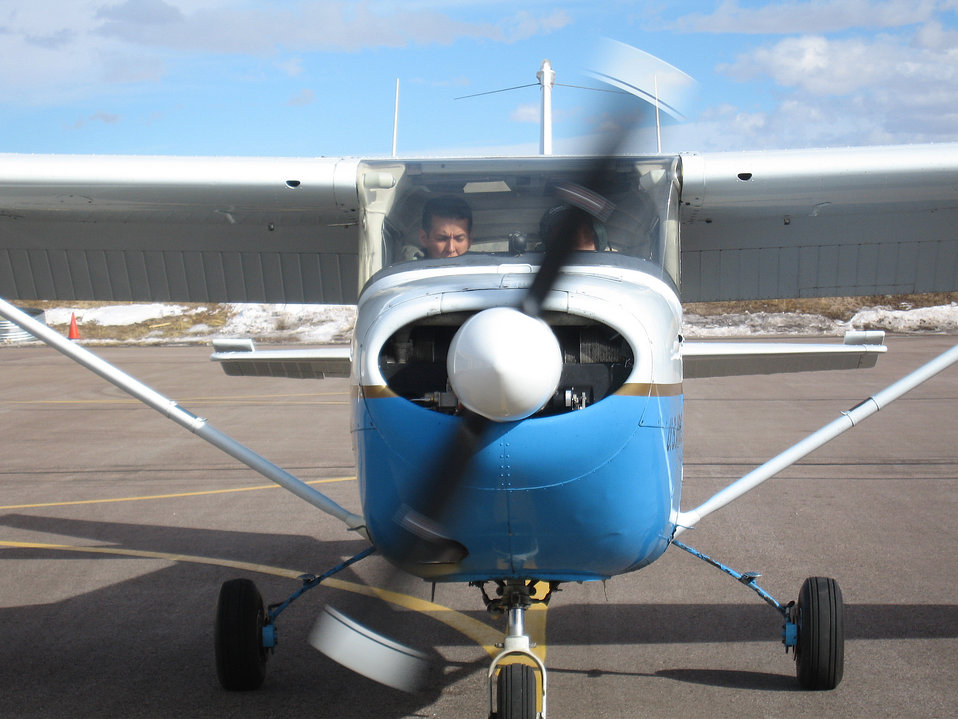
Powered flight returns to Air Force Academy

Capt. Steve Priddy (left) and Cadet 2nd Class Brooke Mauss prepare to take flight in a T-41 Mescalero Feb. 1 at the U.S. Air Force Academy. Captain Priddy is an instructor pilot with the 557th Flying Training Squadron and Cadet Mauss is a member of Cadet Squadron 5 participating in the